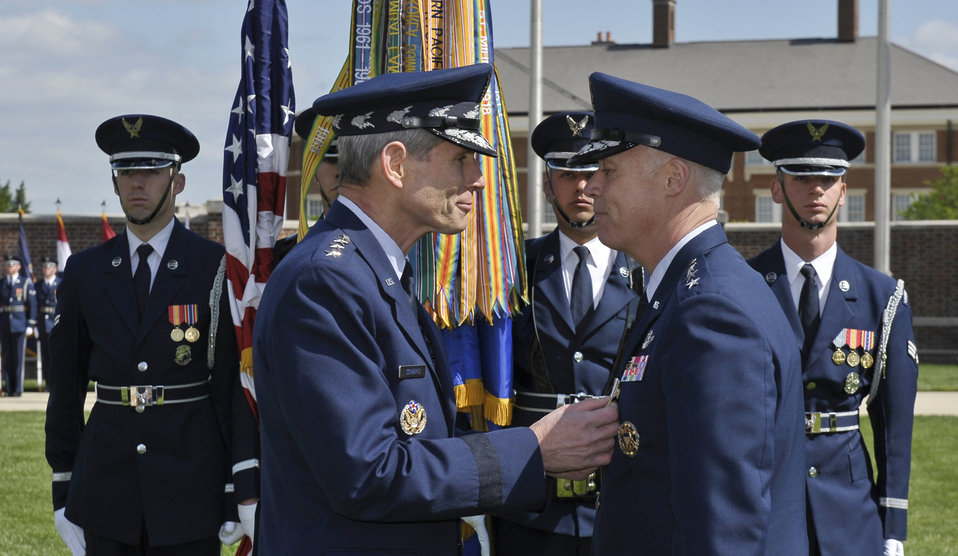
Senior Leader Retirement

Air Force Chief of Staff Gen. Norton Schwartz awards Lt. Gen. Richard Y. Newton III, Assistant Vice Chief of Staff and Director, Air Staff, Headquarters U.S. Air Force, the Distinguished Service Medal at his retirement ceremony on Joint Base Anacostia-Bolling, D.C., on April 27, 2012. Newton retires after 34 years of active military service.